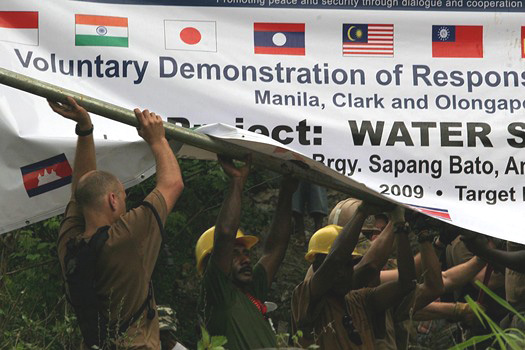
Nations work together to help community

Civilians and military personnel from the United States, Japan, Australia, Indonesia and Papua-New Guinea teamed up to improve the infrastructure and water supply in Sapang Bato, Philippines, as part of the 2009 Association of Southeast Asian Nations Regional Forum Voluntary Demonstration of Response on Disaster Relief May 2 through 8.